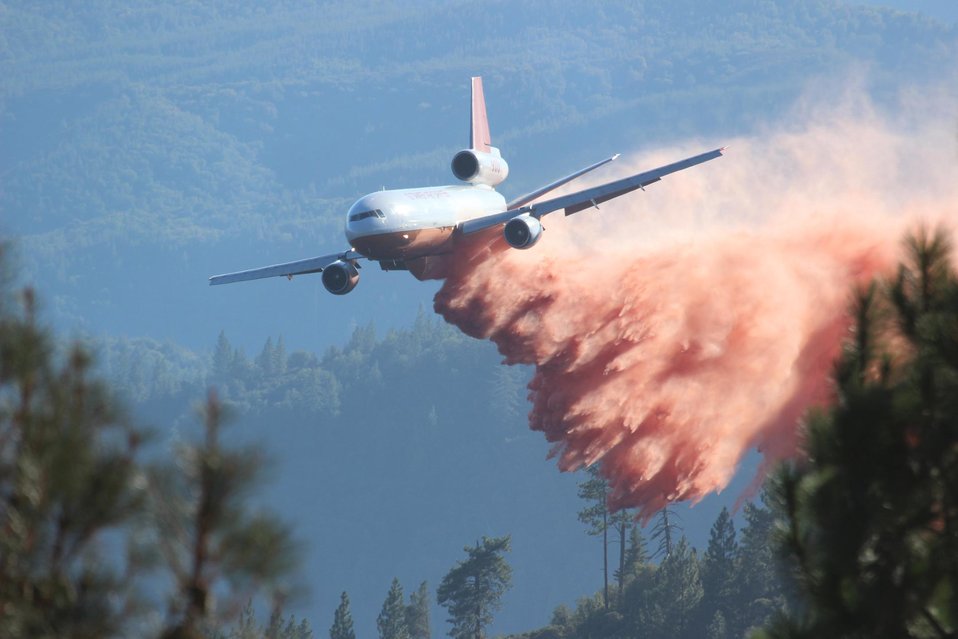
A DC-10 air tanker drops chemical fire retardant below Pilot Peak at the Rim Fire. The Rim Fire in the Stanislaus National Forest near in California began on Aug. 17, 2013 and is under investigation. The fire has consumed approximately 199,237 acres and is 32% contained.